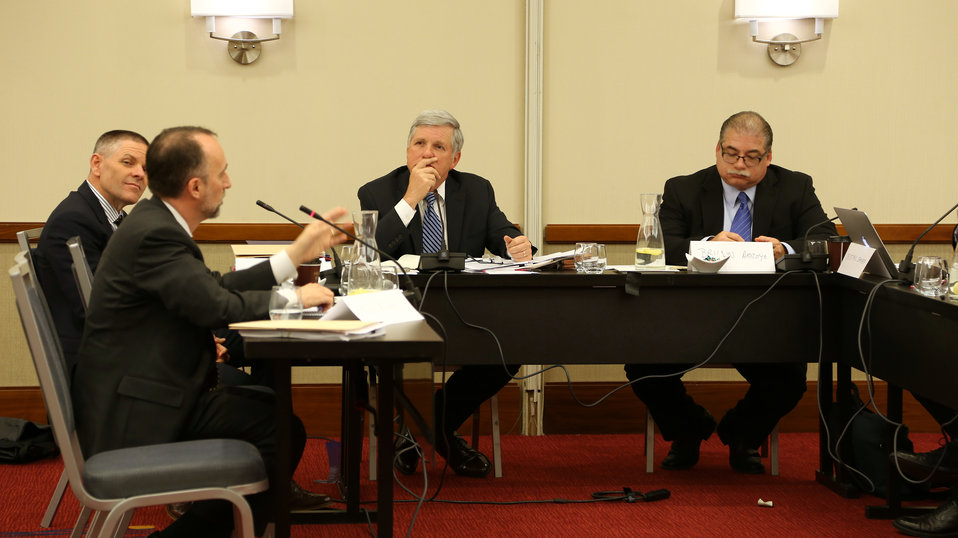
Wildlife Trafficking Advisory Council Meeting March 20, 2014